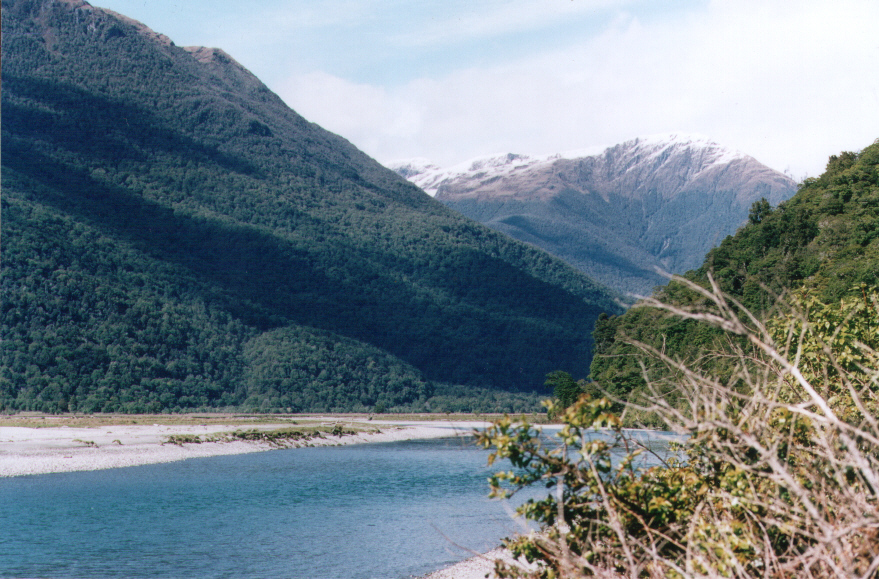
Deutsch: Der Haast River